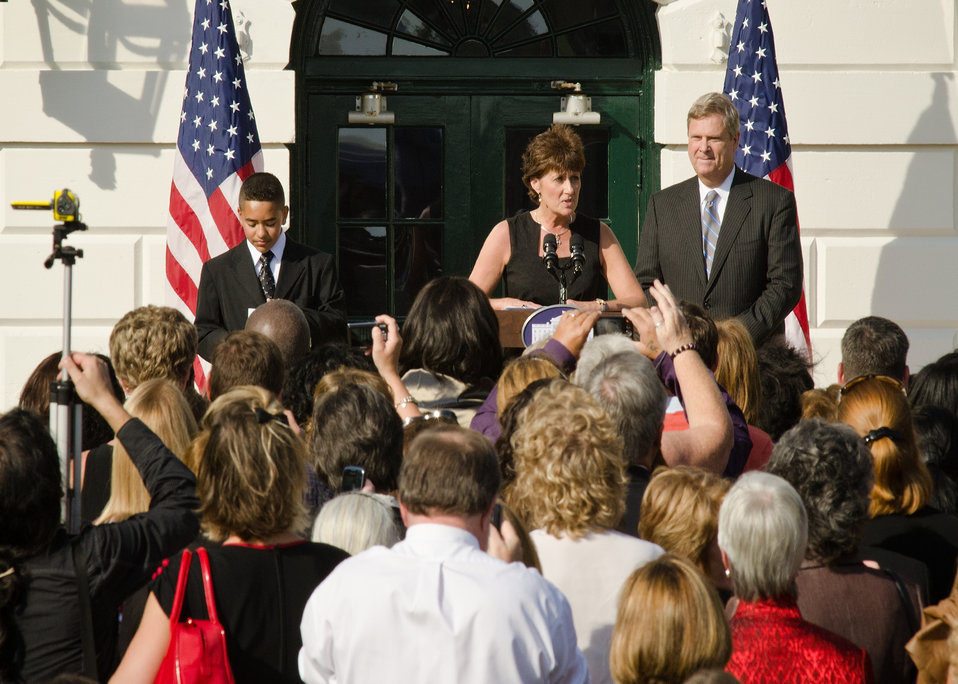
Becky Bounds, Lamar County Schools, Mississippi explained how Lamar County Schools are eating healthier meals and exercising more due to the HealthierUS Schools Challenge prior to First Lady Michelle Obama’s speech at a reception on the South Lawn of the White House in Washington, DC, Monday October 17, 2011, to honor the winners of the HealthierUS Schools Challenge. Behind Bounds from the left are Alex Roman, Walsh Elementary School, Chicago, Illinois and Agriculture Secretary Tom Vilsack. Secretary Vilsack and the First Lady hosted the reception to honor the over 1200 winners in the HealthierUS Schools Challenge that met the First Lady’s goal to double the number of participants in the HealthierUS School Challenge in a year. In February 2010, First Lady Michelle Obama introduced “Let’s Move” incorporating the HealthierUS School Challenge into her campaign to promote a healthier generation of children. The HealthierUS School Challenge recognizes elementary, middle and high schools nationwide that create healthier school environments by providing exceptional nutrition education, nutritious food and beverage choices, physical education and opportunities for physical activity. Since the beginning of the HealthierUS School Challenge in 2004, awards have been given to schools in 44 states. As of September 28, 2011, there are 1631 schools certified. A tool kit on how to become a Healthier U.S. School can be found at www.fns.usda.gov.